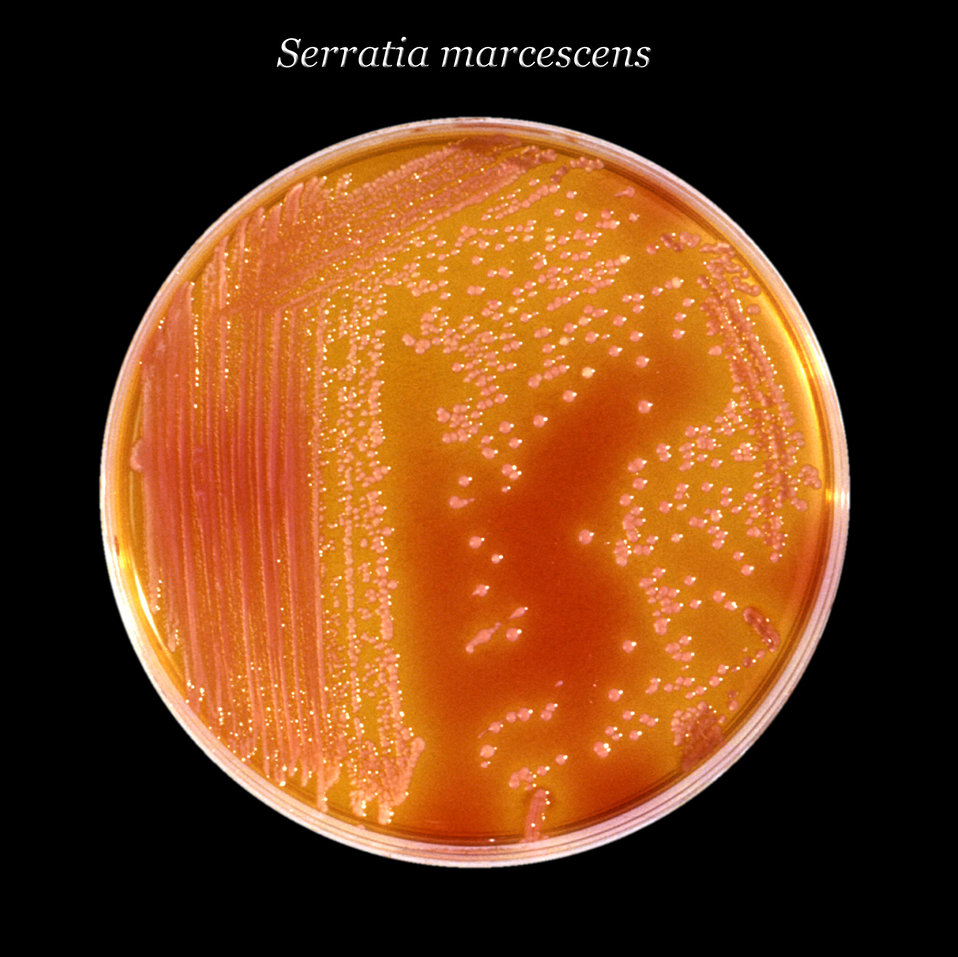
After 24 hours, this inoculated XLD agar culture plate cultivated colonial growth of Gram-negative, rod-shaped and facultatively anaerobic Serratia marcescens bacteria.